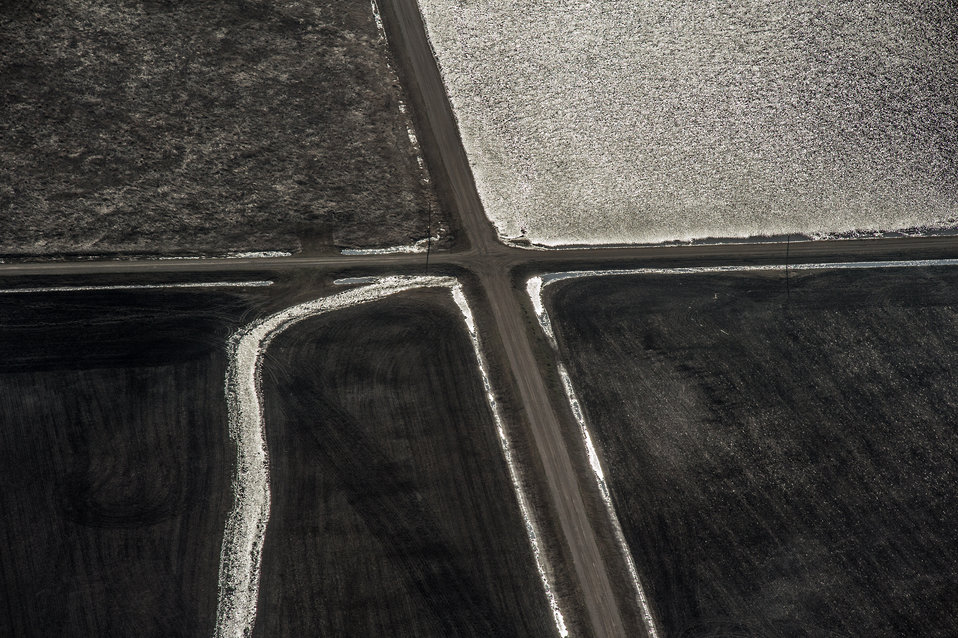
Vertin, U.S. Department of Agriculture (USDA) Natural Resources Conservation Service (NRCS) Wetland Reserve Program (WRP) in Wilkin County, MN, on Tuesday, April 30, 2013. For information about this and other programs from the USDA Red River Basin Initiative (RRBI) please see www.mn.nrcs.usda.gov/news/features13/RRBI.html.